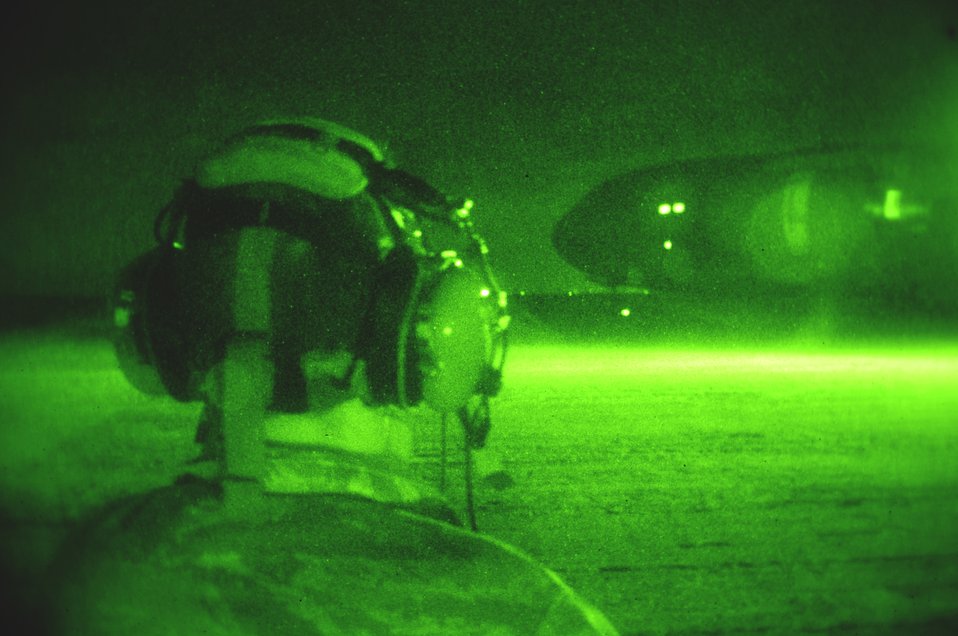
No lights tonight

During blackout conditions, an Airman observes a C-17 Globemaster III as it taxies on a landing zone at Fort Bragg, N. C. during a joint forcible entry exercise. The aircraft is from Charleston Air Force Base, S.C.